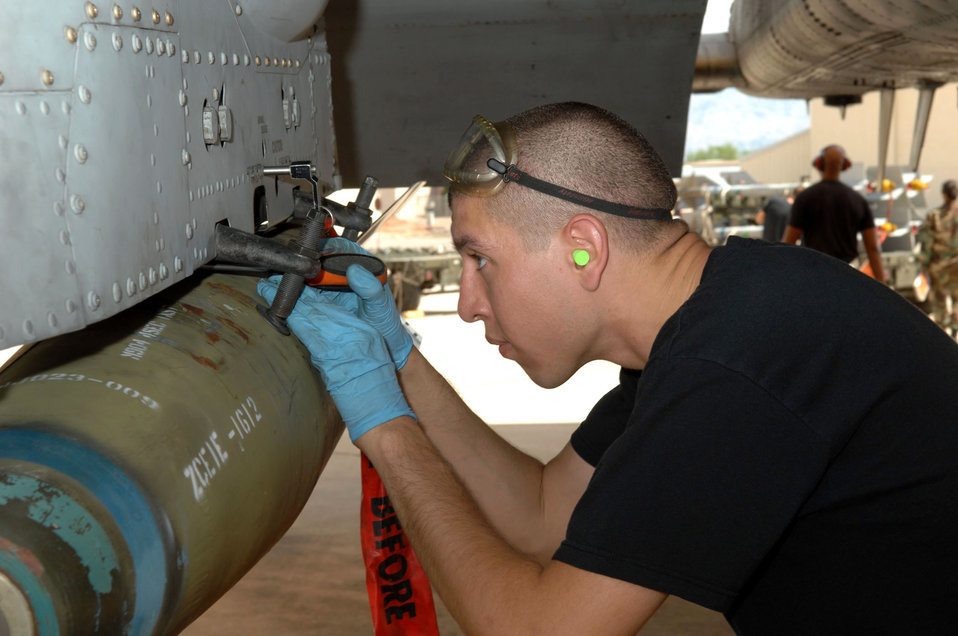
Load crew competition

Airman 1st Class Brandon Hackney secures the firing wire of a MK-82 bomb to an A-10 Thunderbolt II during the quarterly load crew competition July 20 at Davis-Monthan Air Force Base, Ariz. The event is used to boost group morale while enhancing warfighting skills. Airman Hackney is assigned to the 357th Aircraft Maintenance Unit.